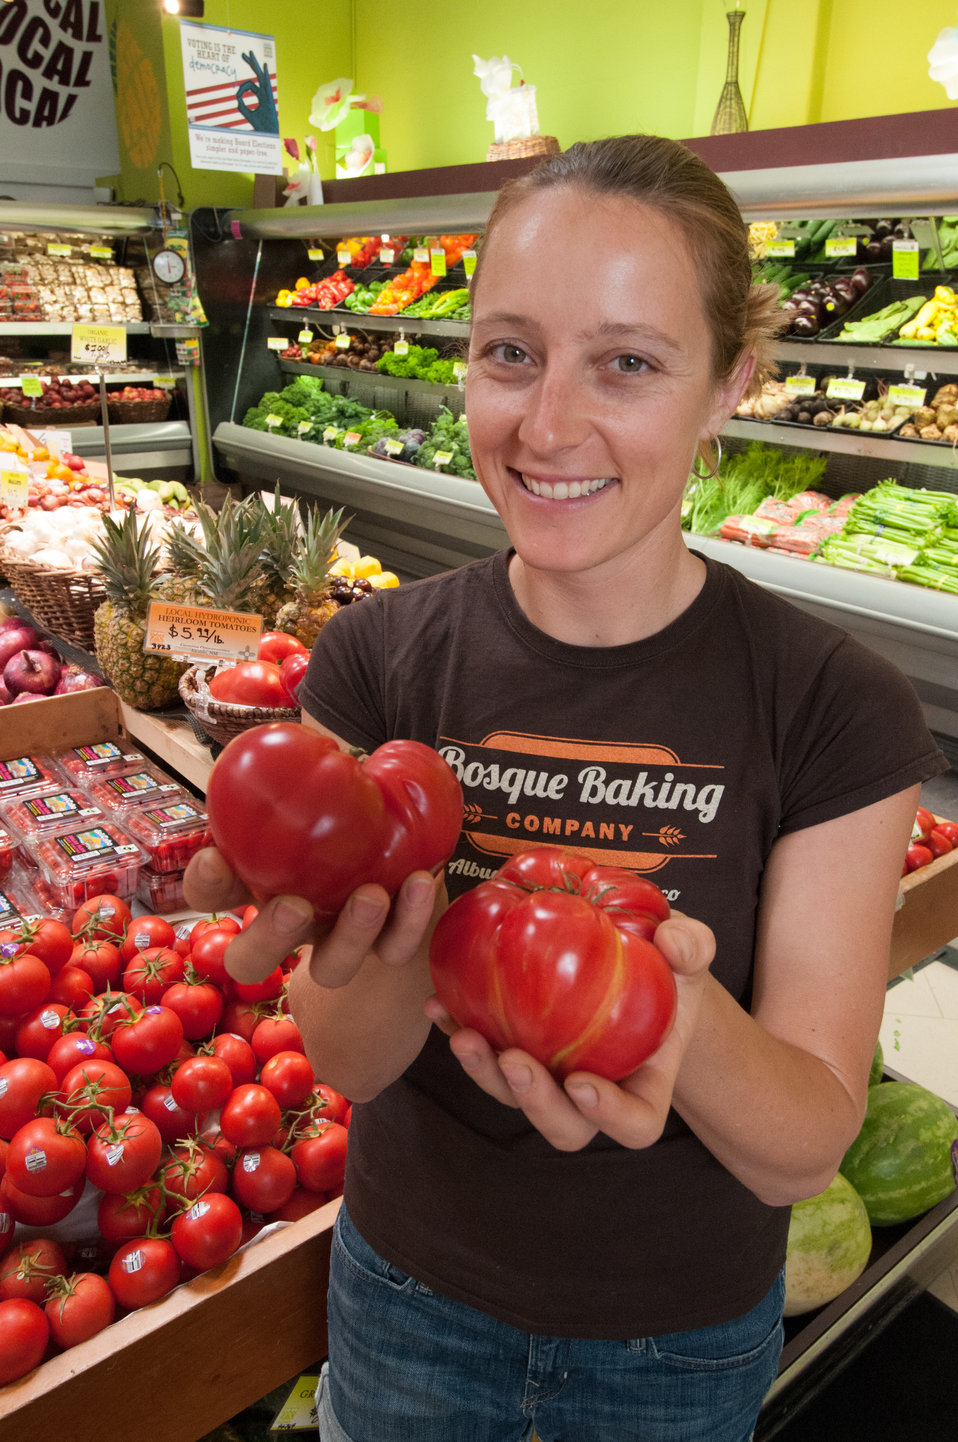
Assistant Membership Coordinator Sarah Wentzel-Fisher displays heirloom tomatoes at the La Montanita Co-op Valley Store in Albuquerque, NM on Monday, Jun. 10, 2013. La Montanita Co-op in is a 17,000 member socially responsible, locally owned food cooperative that supports a stable market for local farmers and producers of sustainable and organic regional/local agriculture in Albuquerque, NM. The co-op has a distribution center and two stores in Albuquerque; Valley and Nob Hill and stores in Santa Fe and Gallup, NM.